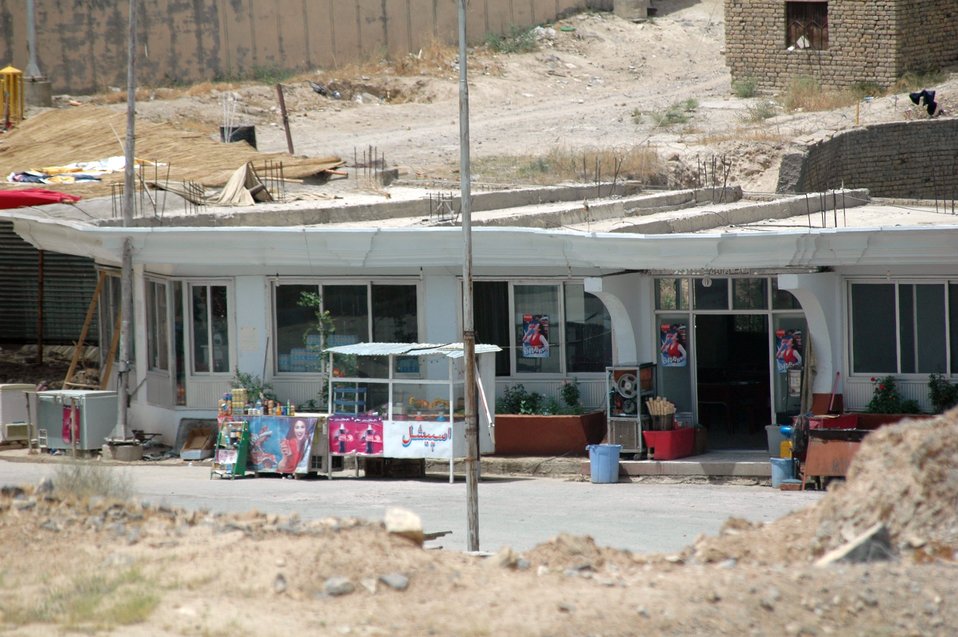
CODEL Berman